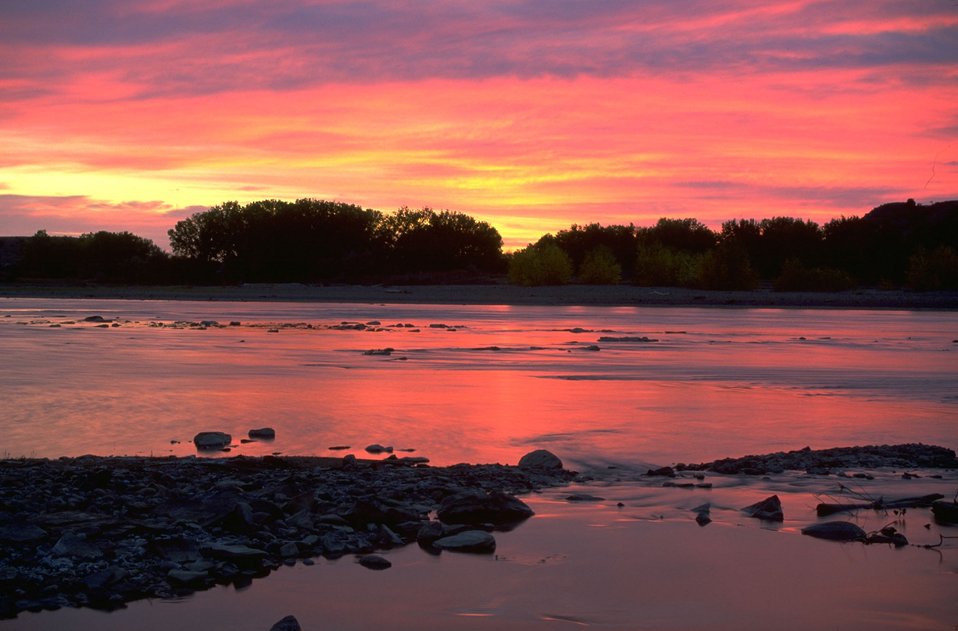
Sunset on the Yellowstone River with trees silhouetted in the background